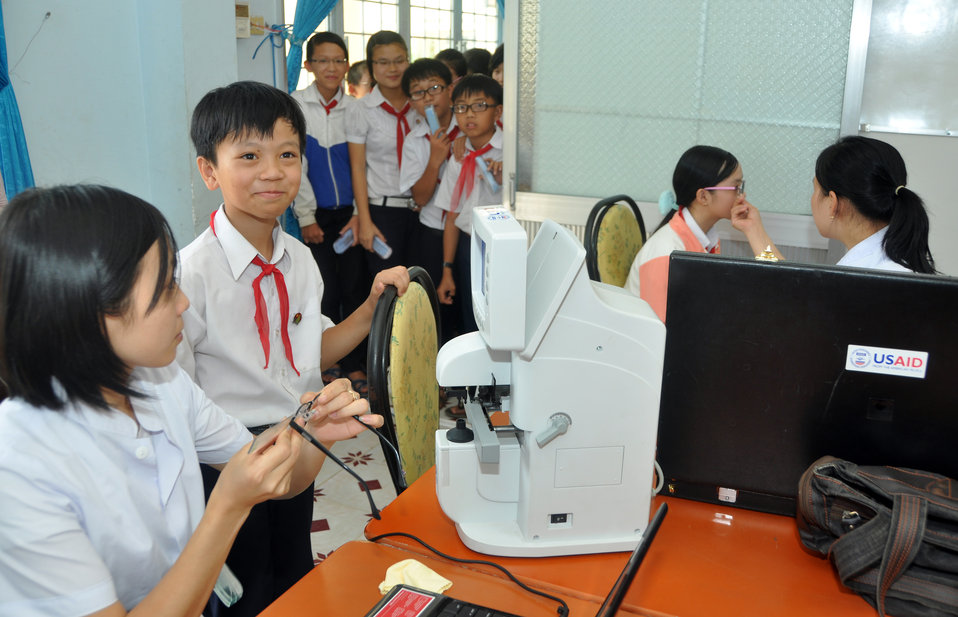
Checking new student eyeglasses in Kon Tum

Eyeglasses examination at Luong The Vinh School, Kon Tum Province